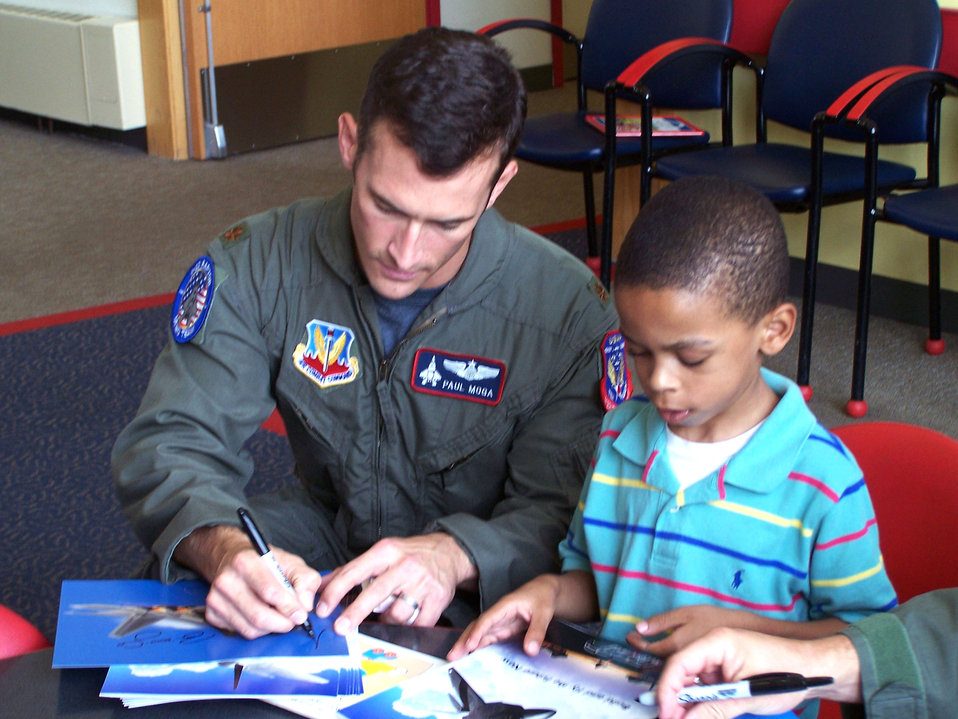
F-22 demo team inspires at children's hospital

Maj. Paul Moga, the Air Force's sole F-22 Raptor demonstration pilot, signs an autograph for La Rabida Children's Hospital patient Maseeh Muhammad Aug. 15 during their visit in support of the Chicago Air and Water Show.